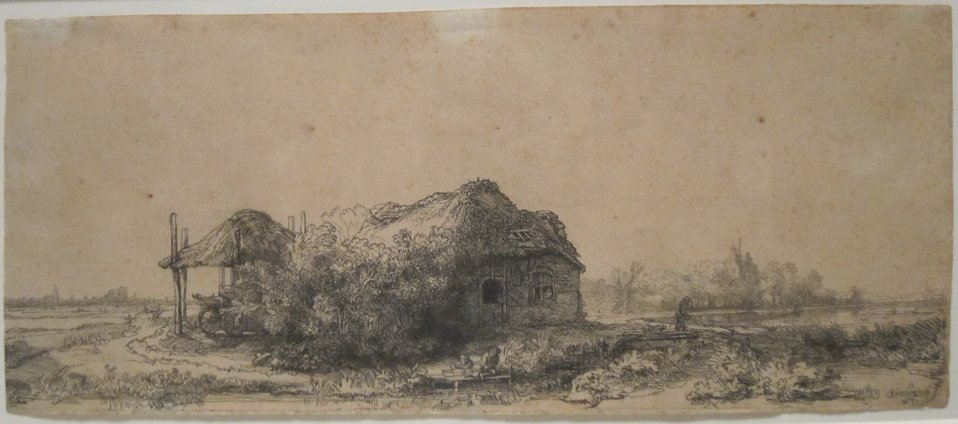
'Landscape with Cottage and Haybam' by Rembrandt, 1641, etching and drypoint, Honolulu Museum of Art